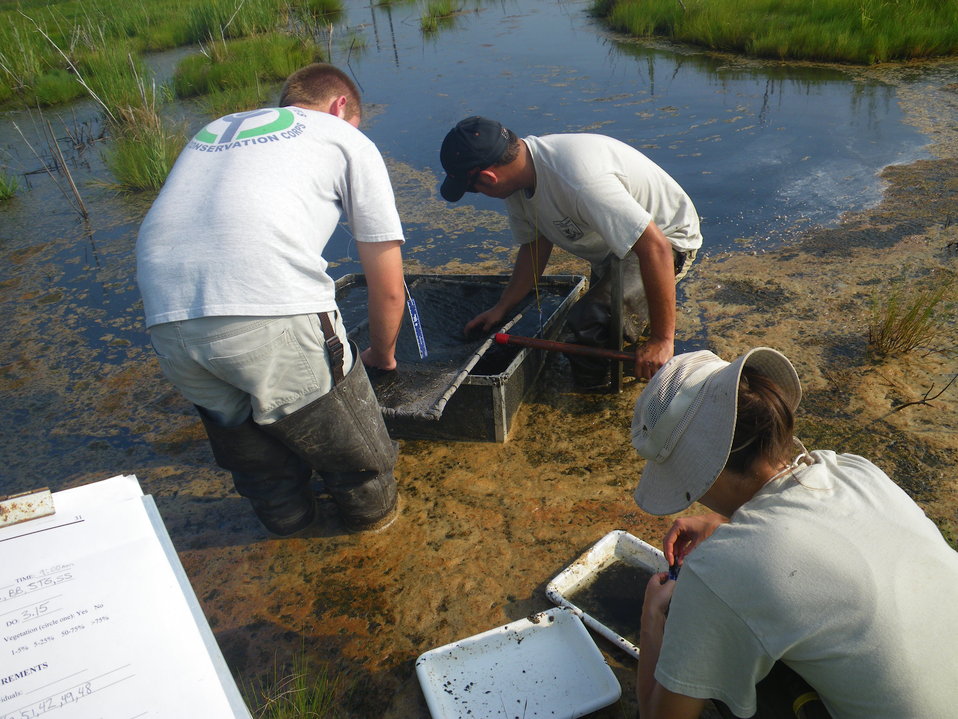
Vegetation monitoring

YCC crew member conduct vegetation monitoring at Bombay Hook National Wildlife Refuge.